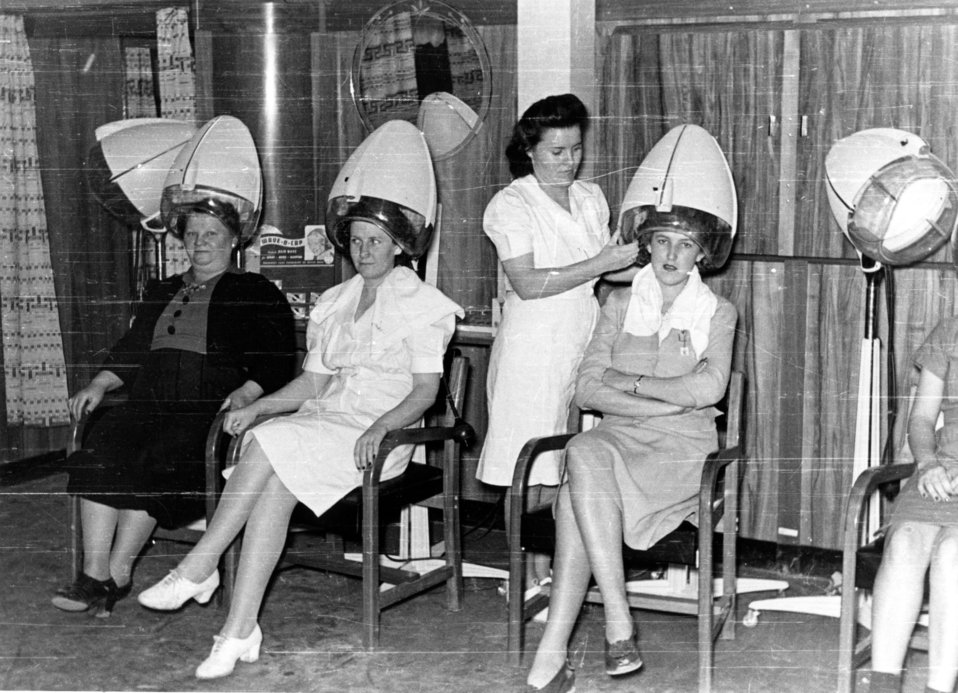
Business activity at Oak Ridge